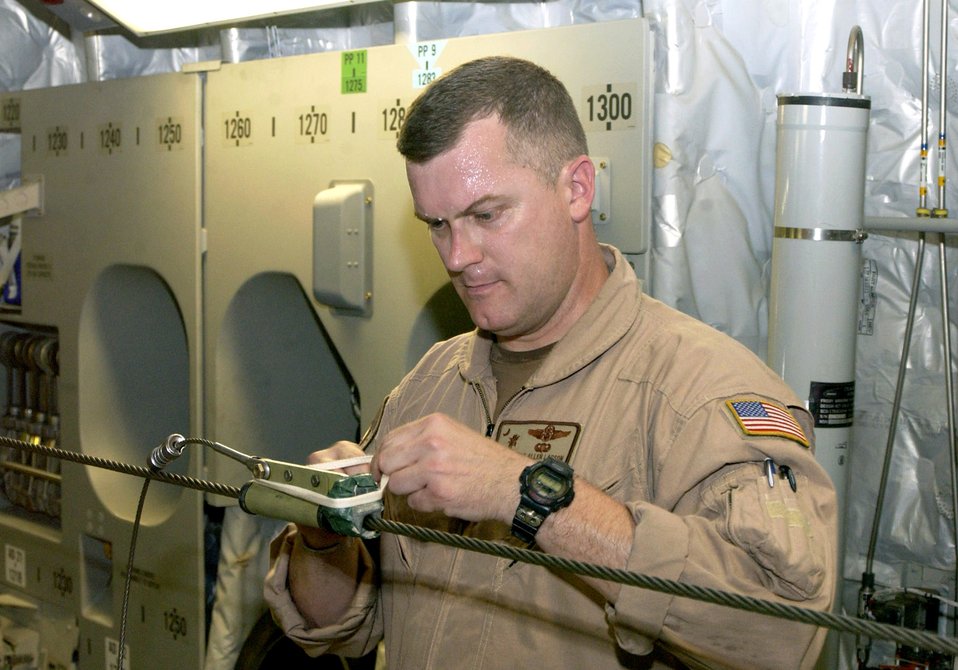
C-17 deployment length, efficiency increase

Master Sgt. Allen Larson prepares the static line for an airdrop of supplies from a C-17 Globemaster III on July 3 in Southwest Asia. Sergeant Larson is an Air Force Reserve loadmaster deployed with the 816th Expeditionary Airlift Squadron.